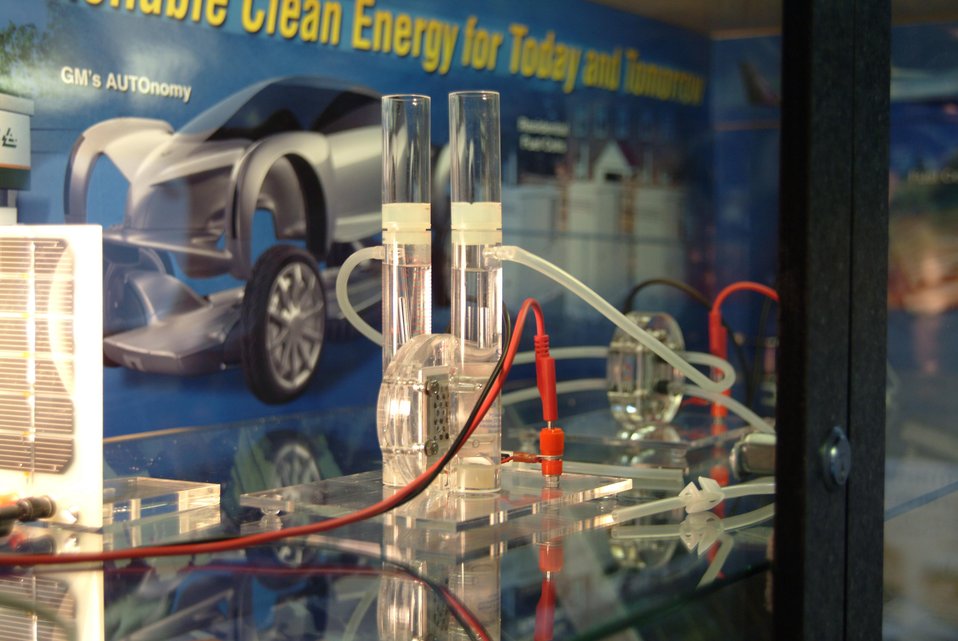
INSIDE THE RENEWABLE ENERGY AND ENERGY EFFICIENCY ON THE WHEELS BUS.

THIS PROJECT FEATURES AN EDUCATIONAL BUS AND A TEN FOOT TRAILER, DESIGNED TO BRING RENEWABLE ENERGY TECHNOLOGIES AND ENERGY EFFICIENCY PROGRAMS AND INFORMATION TO CONSUMERS, TEACHERS AND STUDENTS, AND COMMUNITY VENUES. THE BUS AND TRAILER ARE EQUIPPED WITH HANDS ON EDUCATIONAL WORKSTATIONS, ELECTRONIC MEDIA, AND TEACHER RESOURCE MATERIALS.